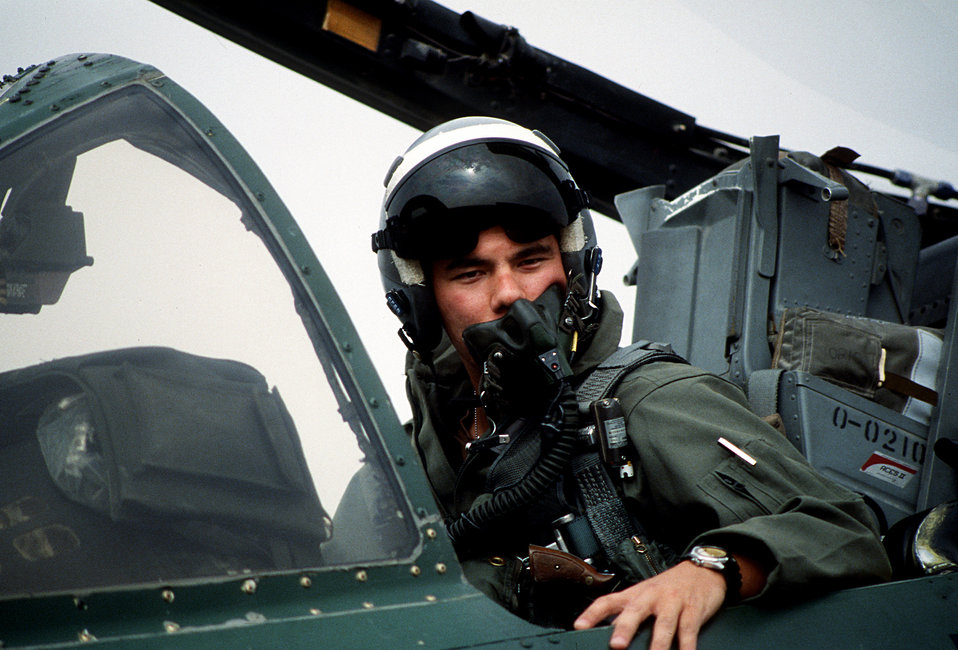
A-10A Thunderbolt II

1990's -- The pilot of an A-10A Thunderbolt II attack aircraft from the 23rd Tactical Fighter Wing of England Air Force Base, La., communicates with his crew chief following a mission during Operation Desert Storm.